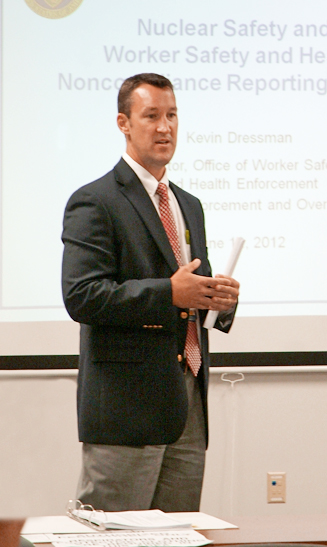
DOE HQ Review Focuses on Improved LATA Kentucky Worker Safety

Department of Energy Office of Health, Safety and Security headquarters representatives recently spent three days at the Paducah Site helping LATA Kentucky better identify and correct issues before they result in worker illness or injury.
“It supports our mutual bottom line of ensuring that workers go home in the same condition they arrive in that day,” said Kevin Dressman, director of the Office of Worker Safety and Health Enforcement, a branch of the Office of Enforcement and Oversight. “LATA Kentucky saw the benefits of building relationships with our office and increasing our awareness of the programs the company has in place.”